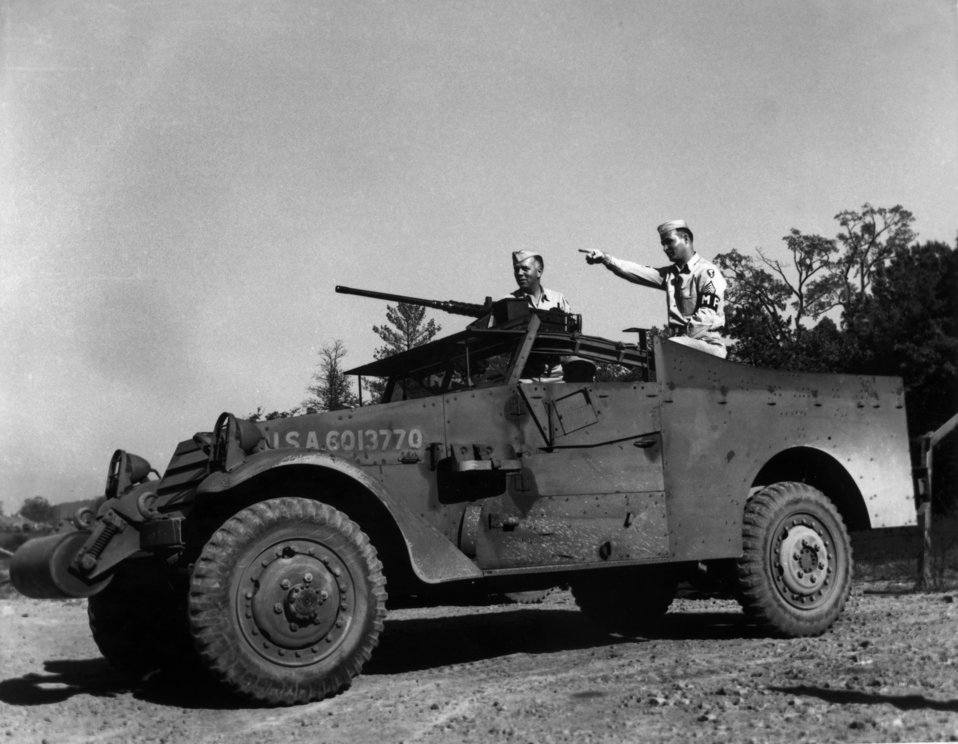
MP detachtment Oak Ridge

1212-8 DOE photo by Ed Westcott

MP detachtment Oak Ridge Tennessee 1945